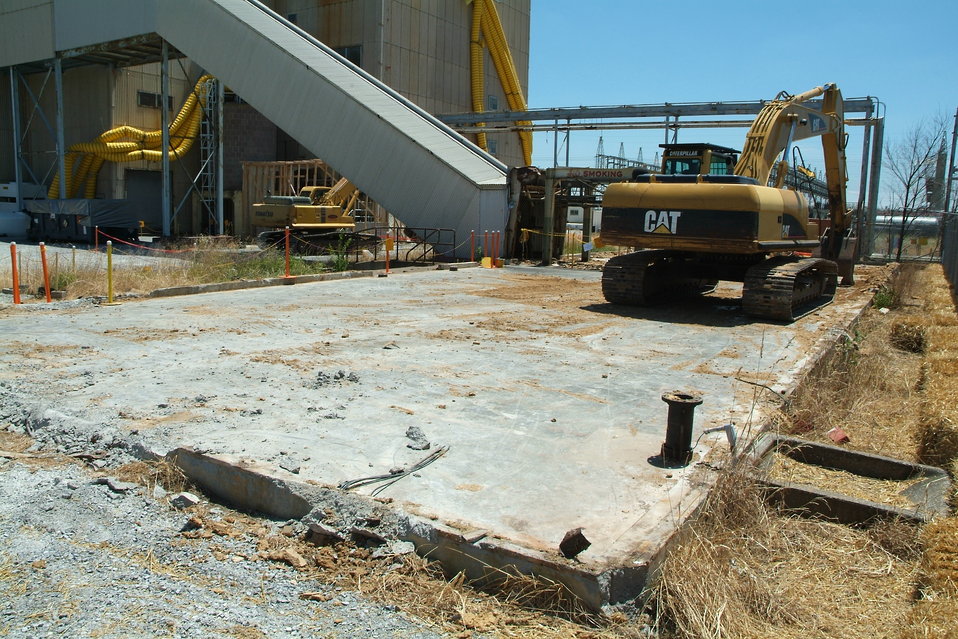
Magnesium storage after demolition

Recovery Act work conducted at the Paducah site.